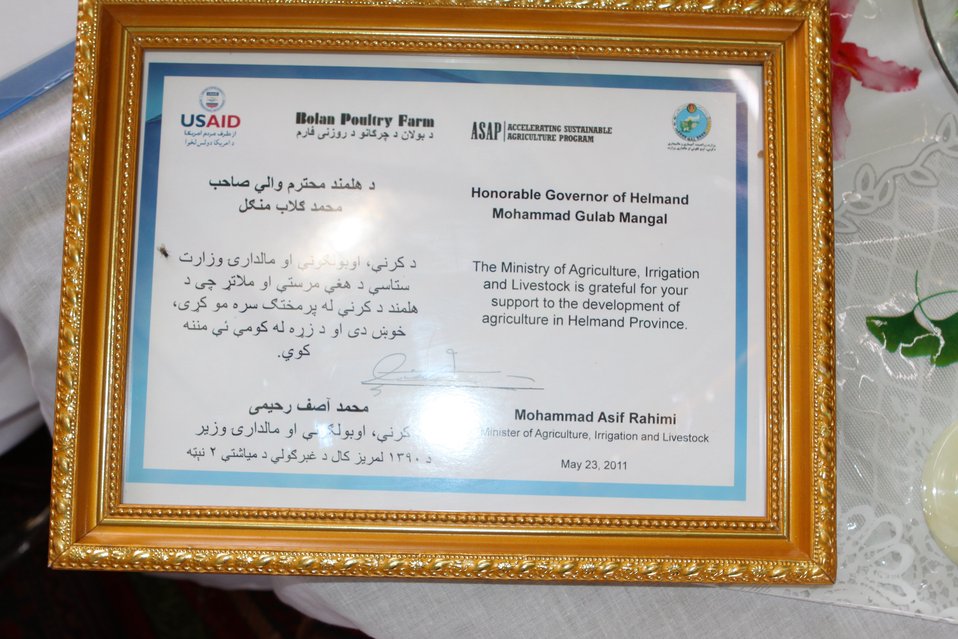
Bolan Poultry Farm